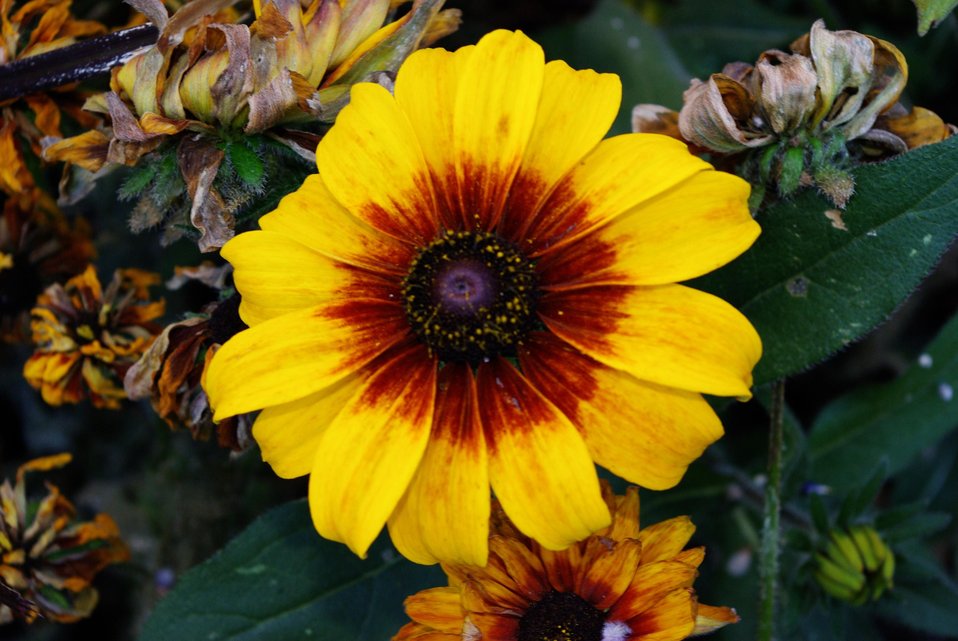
English:
Image title: A beautiful flower among the dying Image from Public domain images website, http://www.public-domain-image.com/full-image/flora-plants-public-domain-images-pictures/flowers-public-domain-images-pictures/a-beautiful-flower-among-the-dying.jpg.html